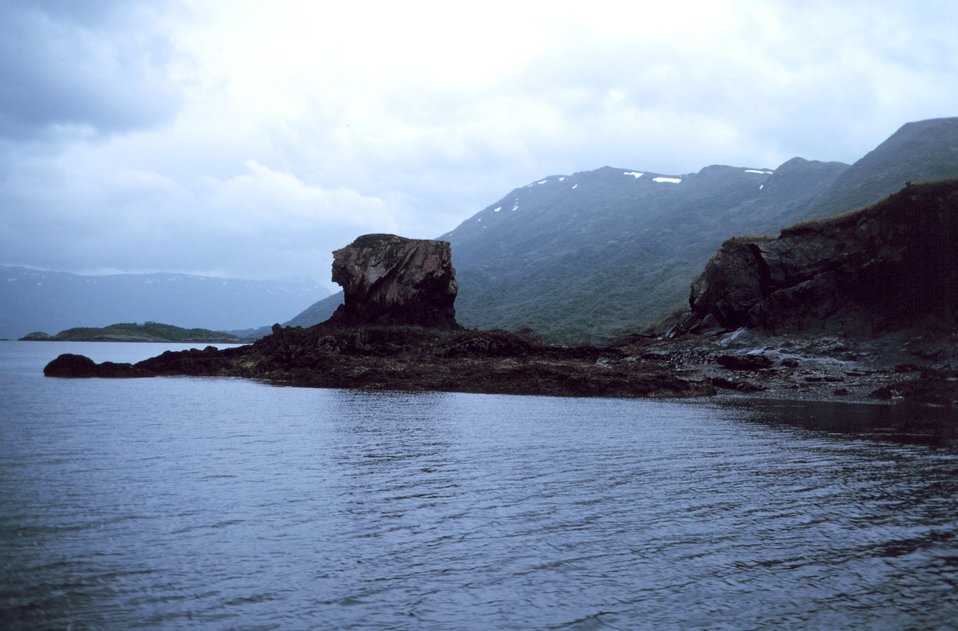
Piridon Bay sea stack.